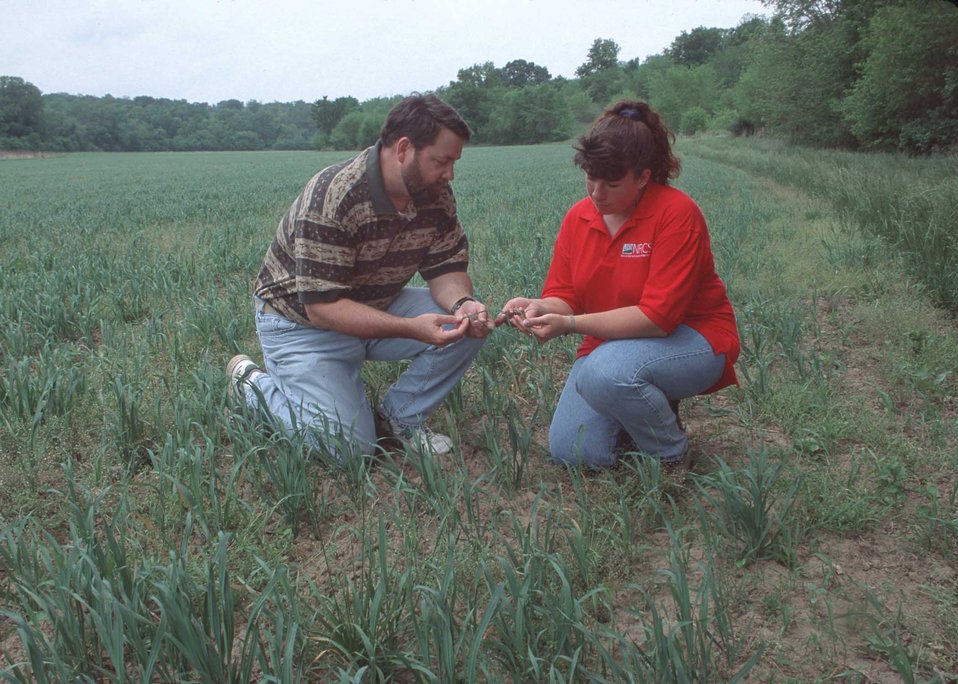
NRCS District Conservationist Rhonda Holliday works with Cass County, Illinois private landowner. He decided to dedicate 27 acres of bottomland to the wild turkey population that call his farm home.